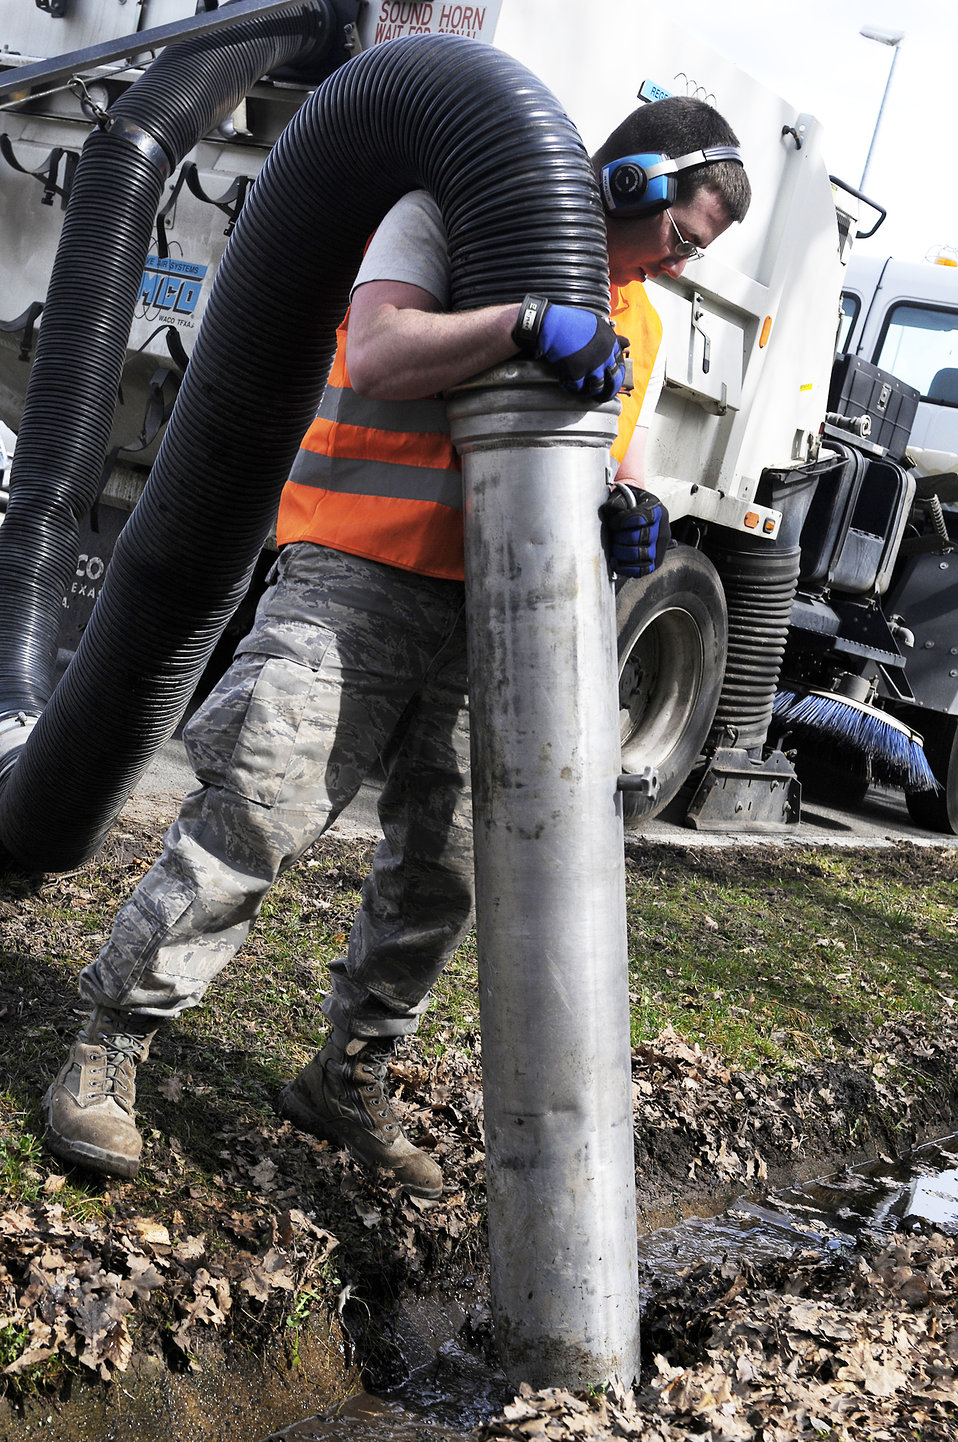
Suck it up

Airman 1st Class Alexander Feenaughty vacuums muddy water with a street sweeper vacuum tube April 2, 2010, at Ramstein Air Base, Germany. Street cleaning is part of a normal maintenance procedure to reduce sewer clogging.